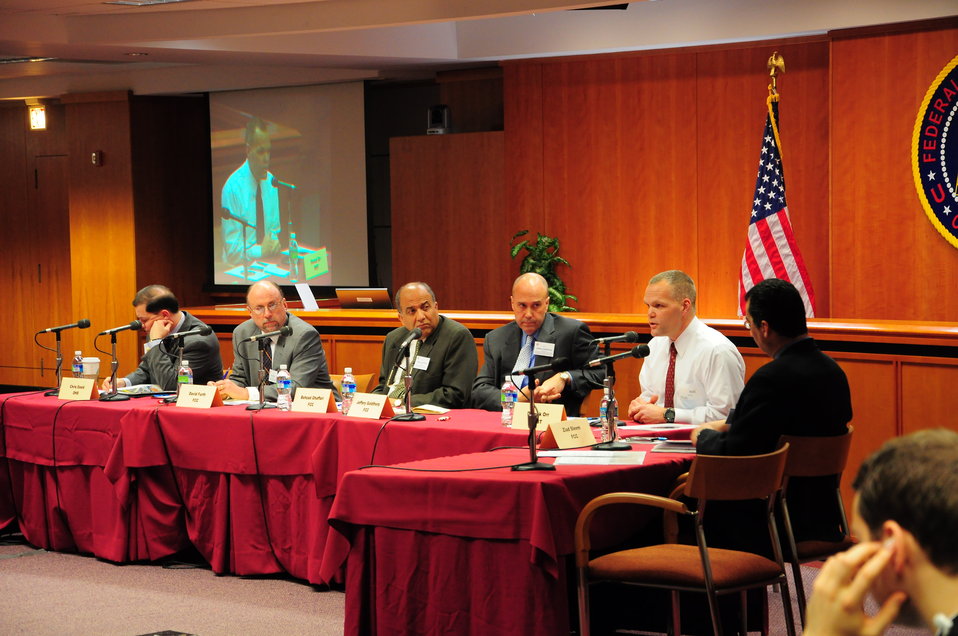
FCC ERIC Public Safety Workshop

ERIC: Public Safety Workshop; Commission Meeting Room; March 02, 2010